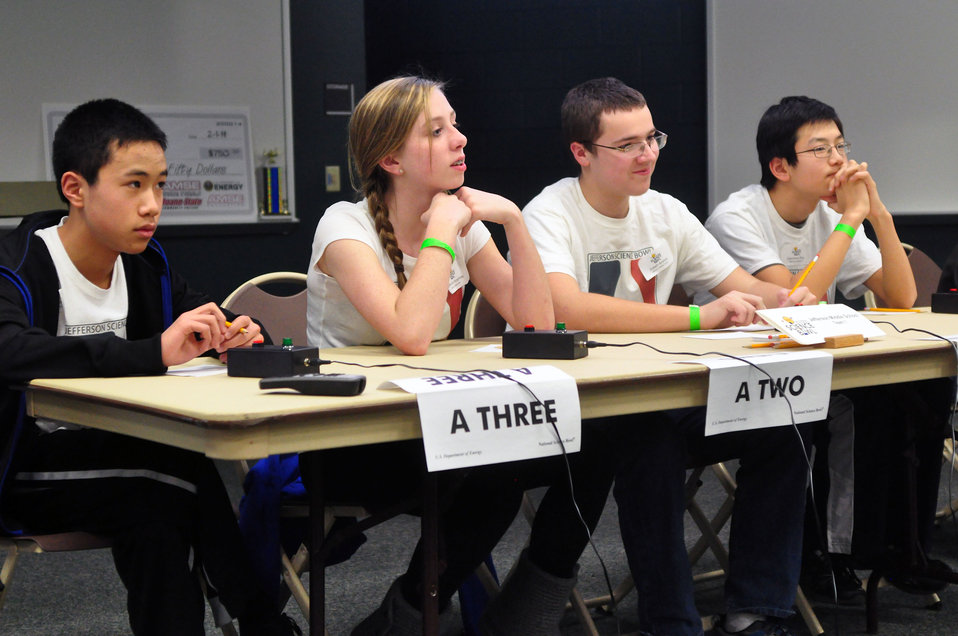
Jefferson Middle First Place DOE Middle School Science Bowl

14-017 DOE photo Lynn Freeny 2-1-2014 Oak Ridge Tennessee